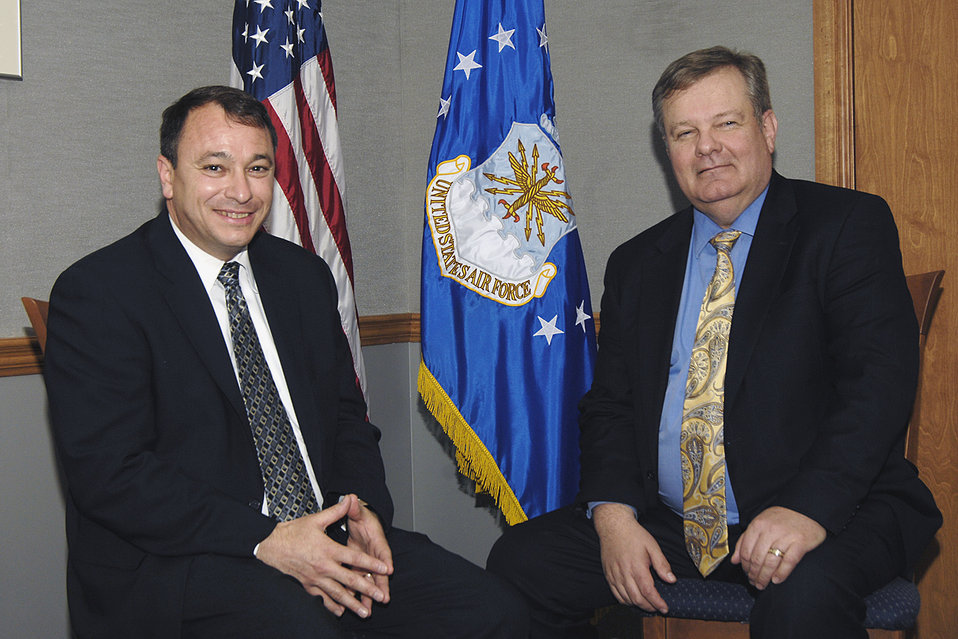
Bigger role for small business

Ronald Poussard (left), director of Air Force small business programs, and David Van Buren, principal deputy assistant secretary of the Air Force for acquisition, discuss the importance of small business during a joint interview April 2 at Hanscom Air Force Base, Mass.